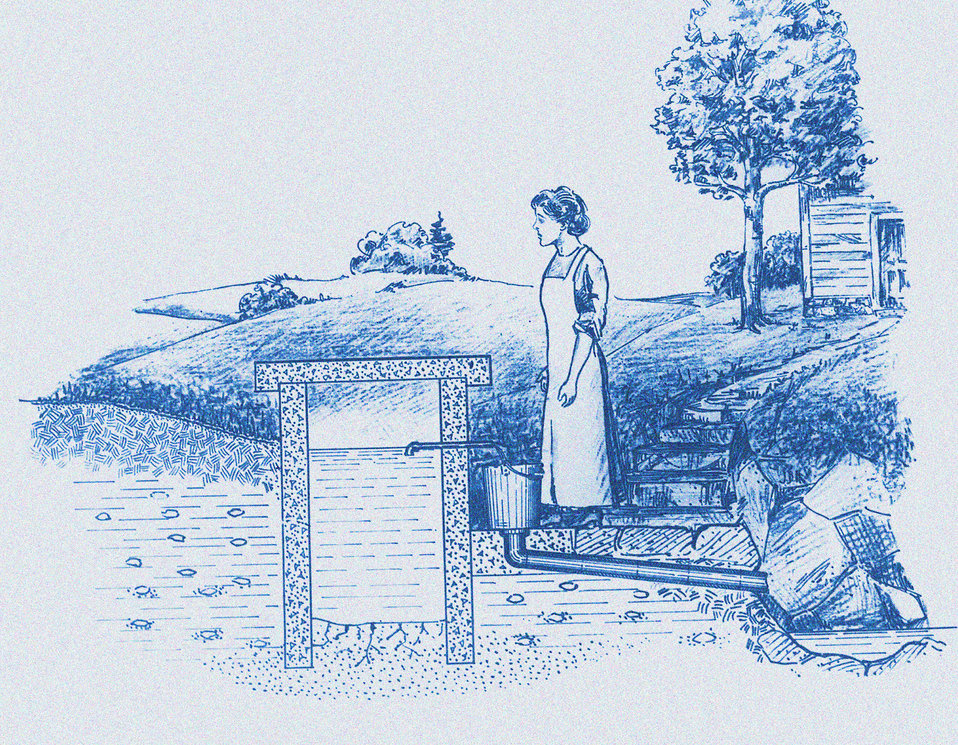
This historic diagram, which had been digitally enhanced and colorized, depicted the correct way in which a spring, used as a farm's potable water supply, should be safely configured in order to avoid contamination originating from surrounding structures such a home, barn, or waste piles. Published in 1915, this was one of a series of instructional drawings used by the Minnesota Board of Health to train its state public health workers.